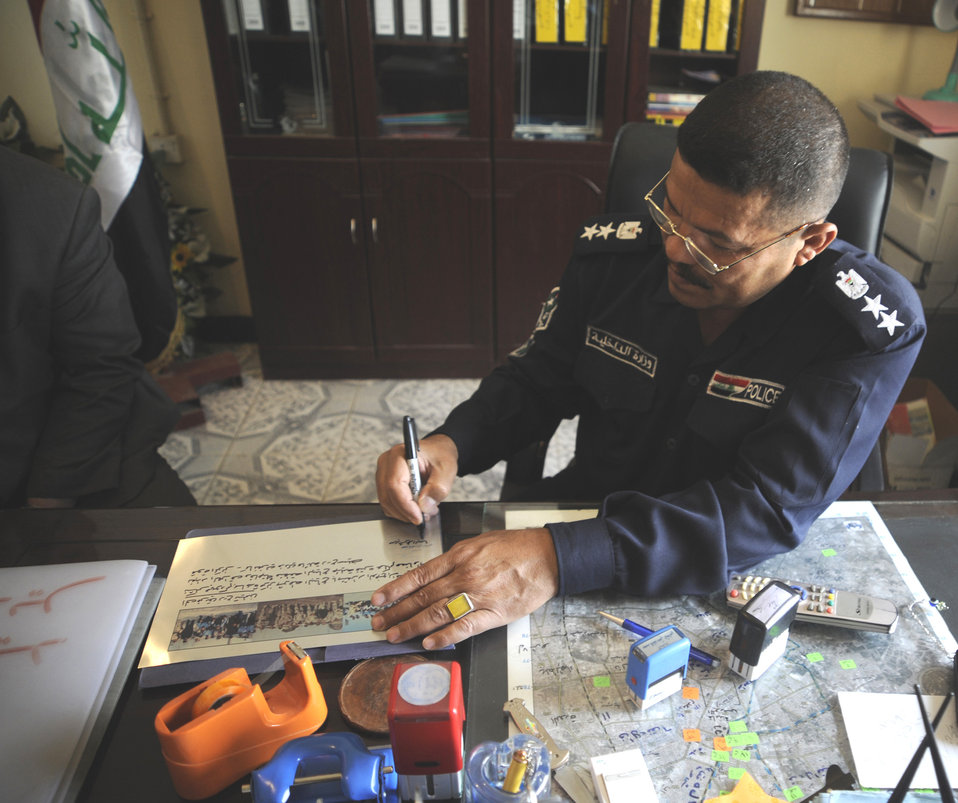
Airmen honor fallen comrade in arms

The Al Baya District Iraqi police station commander signs a plaque which will serve as a memorial for Staff Sgt. John T. Self who was killed in action two years ago when an improvised explosive device struck his vehicle May 14 in Iraq.